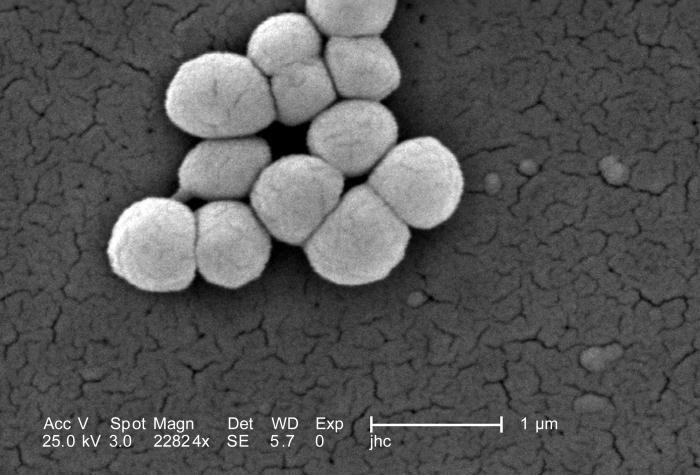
Under a very high magnification of 22824x, this scanning electron micrograph (SEM) depicted some of the ultrastructural morphologic features displayed by this group of Gram-positive Micrococcus luteus bacteria. The specimen was obtained from a pure culture that was raised on a polycarbonate filter, for the purpose of identification of the organism.